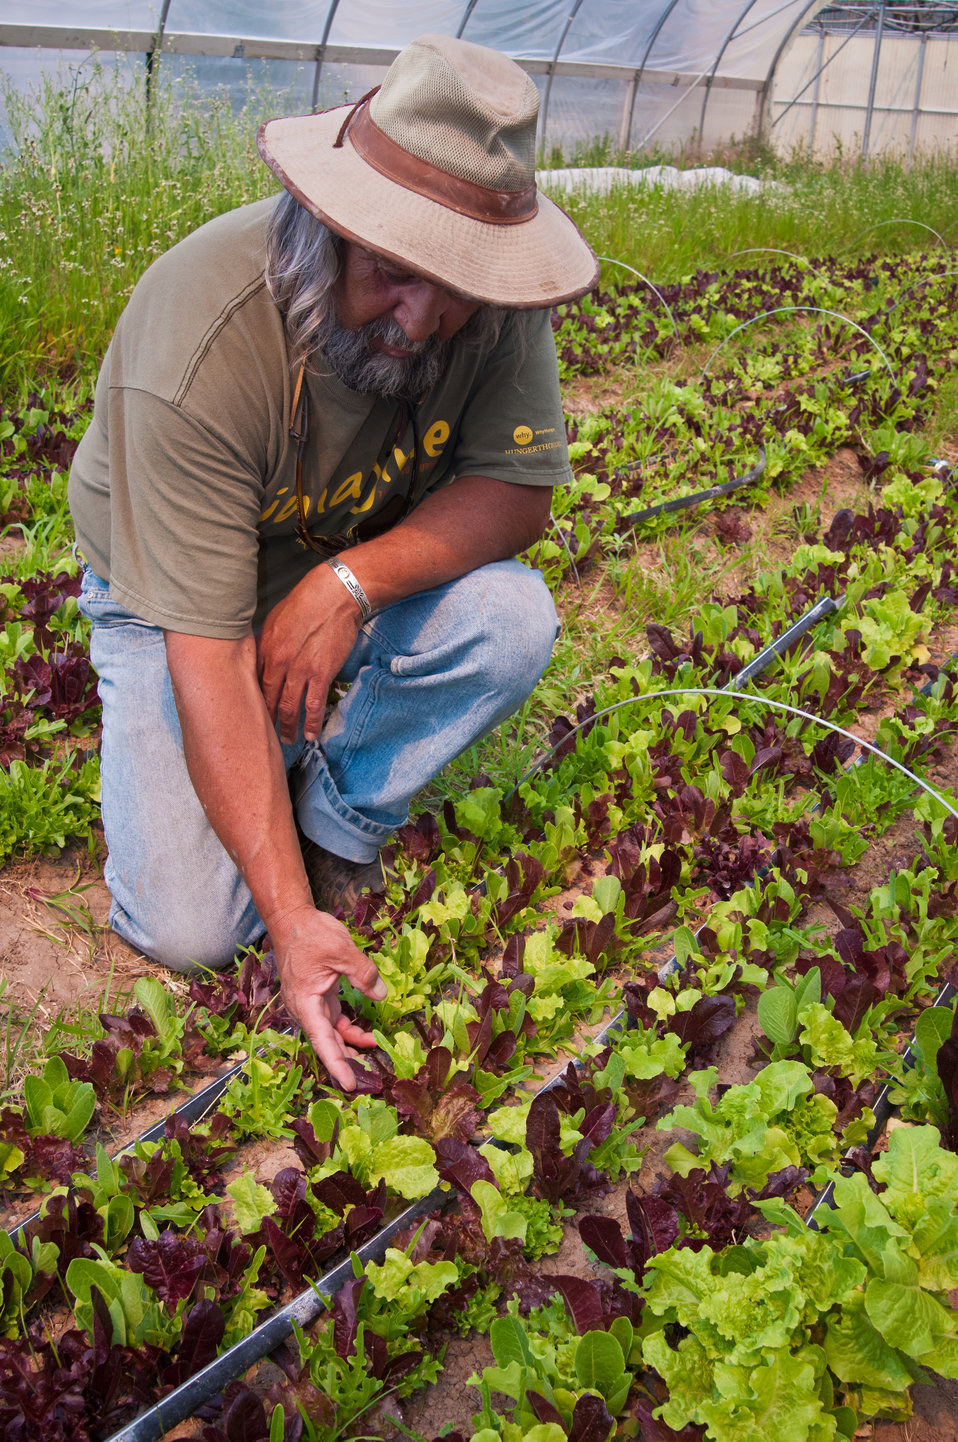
Espanola, NM organic farmer Don Bustos has benefited from the U.S. Department of Agriculture (USDA) StrikeForce Initiative. The USDA StrikeForce Initiative in cooperation with public and private organizations offers many economic grants, loans and conservation contracts through USDA’s Rural Development (RD) and the Natural Resources of Conservation Service (NRCS) for areas of rural America with a high percentage of people living below the poverty level and considered economically distressed.